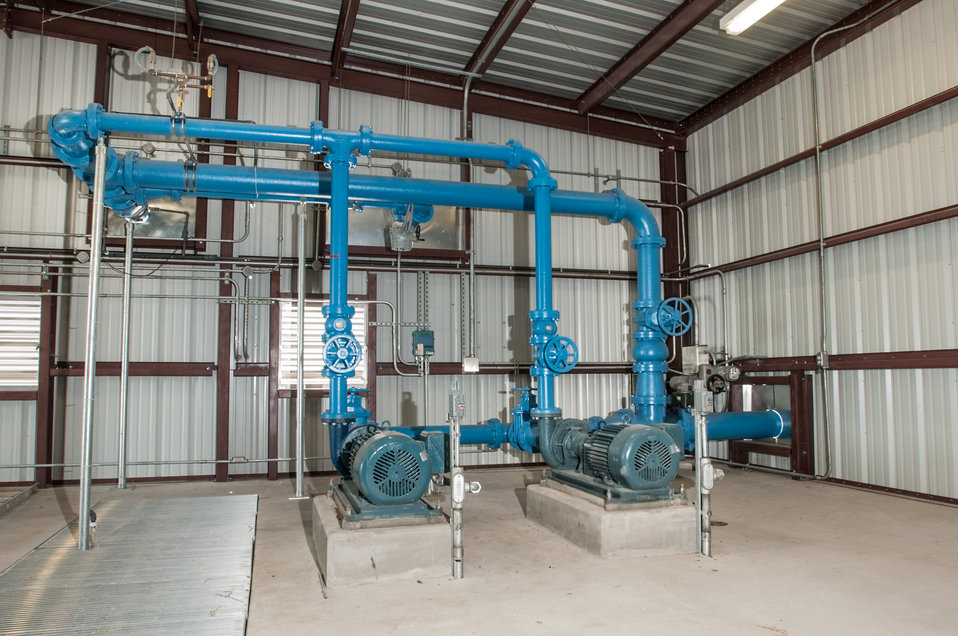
Pump systems of the Freer Water Control and Improvement District (FWCID) Arsenic Removal System facility, in Freer, TX, on Tuesday, June 18, 2013. Freer Water Control and Improvement District (FWCID) benefits from the financial assistance of the U.S. Department of Agriculture (USDA) Rural Development (RD) to complete a two-phase approach to meeting the city’s water supply and safety needs, on Tuesday, June 18, 2013. Although, the naturally occurring arsenic levels have remained constant for more than a century, the Environmental Protection Agency (EPA) safe level standards have established lower levels of arsenic to be safe for human consumption. To meet those levels FWCID approached USDA and was awarded a $986,000 loan for Phase I, to install two new water wells, each rated at 167 gallons per minute (creating a total of eight wells); 13,600 feet of well collection lines; and 15,000 linear feet of well control line to remotely control the well pumps and the 1,000,000 gallon holding tank at the well facility, which supplies water to the new Arsenic Removal System (Phase II). Previously, water was manually controlled by personnel who knew when and how long to manually opened and closed water valves or started well pumps to ensure holding tank levels were within operating levels during peek and slack times of the day. Phase II was a combination of a $1,832,000 loan and a $1,258,750 grant, which provided for the customized arsenic removal system, seen in these photos. The system includes a new 3,530 sp. ft. facility, on a .76-acre site, and houses the operations room, computer and power system, laboratory room, and pump systems. The entire operation can be monitored through a desktop computer interface system. The computer-controlled system ensures raw water is fed to the arsenic removal pump system, which works in sequence to maintain a constant pressure, when needed, to pump water through (blue) arsenic removal absorber vessels, and into ground storage tanks that feeds the residential and commercial needs of the city. Samples of water are periodically tested; and so far the arsenic levels have been below 1 part per billion (PPB), well under the 10 PPB limit.